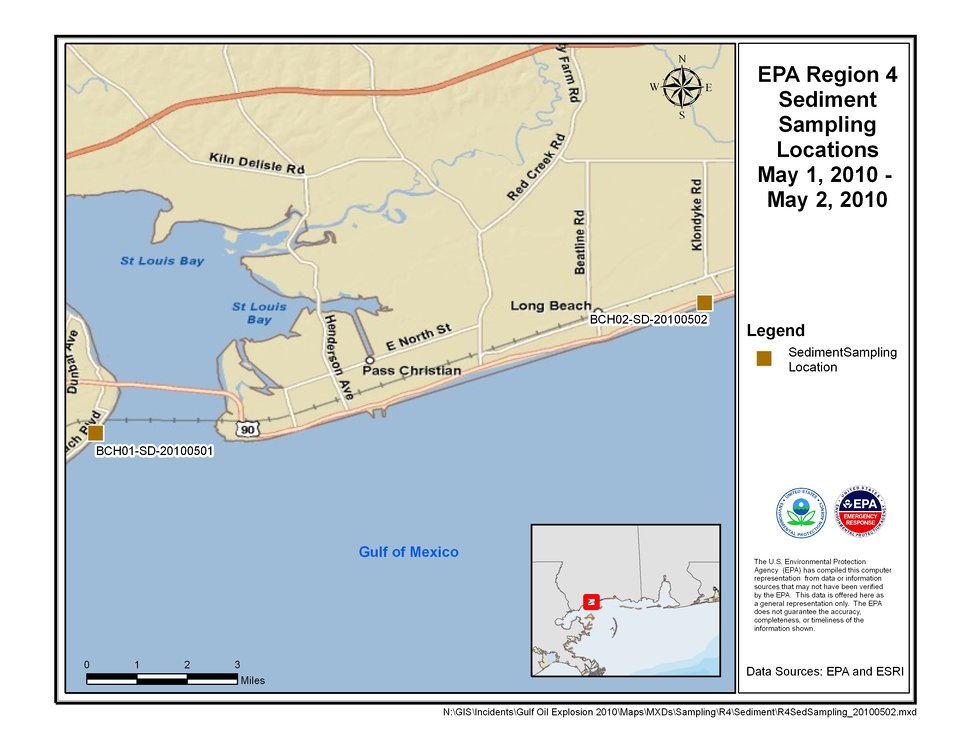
EPA Sediment Sampling Locations May 1-2, 2010